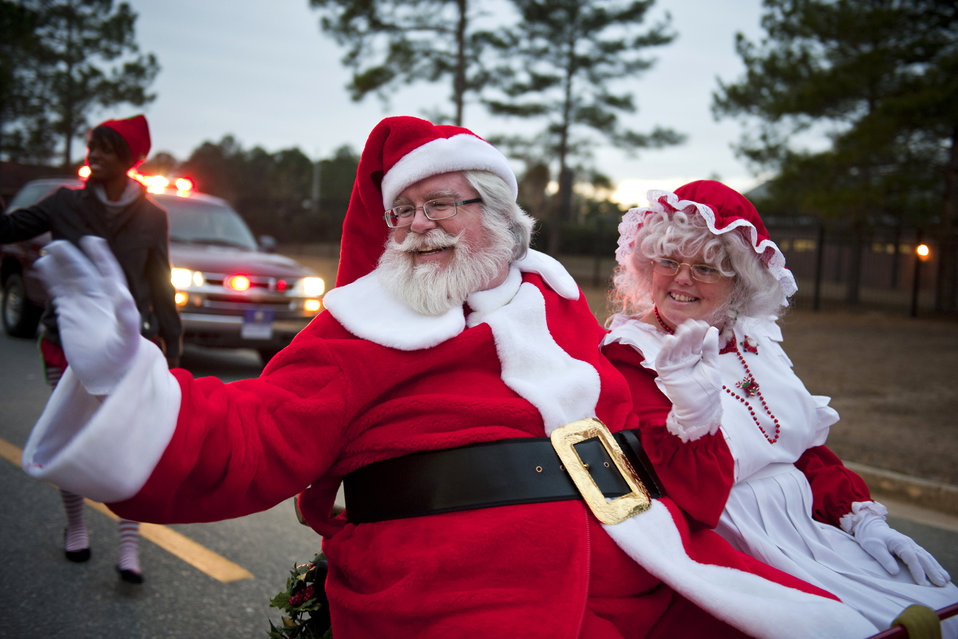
Ho, ho, ho!

Mr. and Mrs. Claus greet children during the annual base tree lighting and holiday parade Dec. 10, 2010, at Moody Air Force Base, Ga.